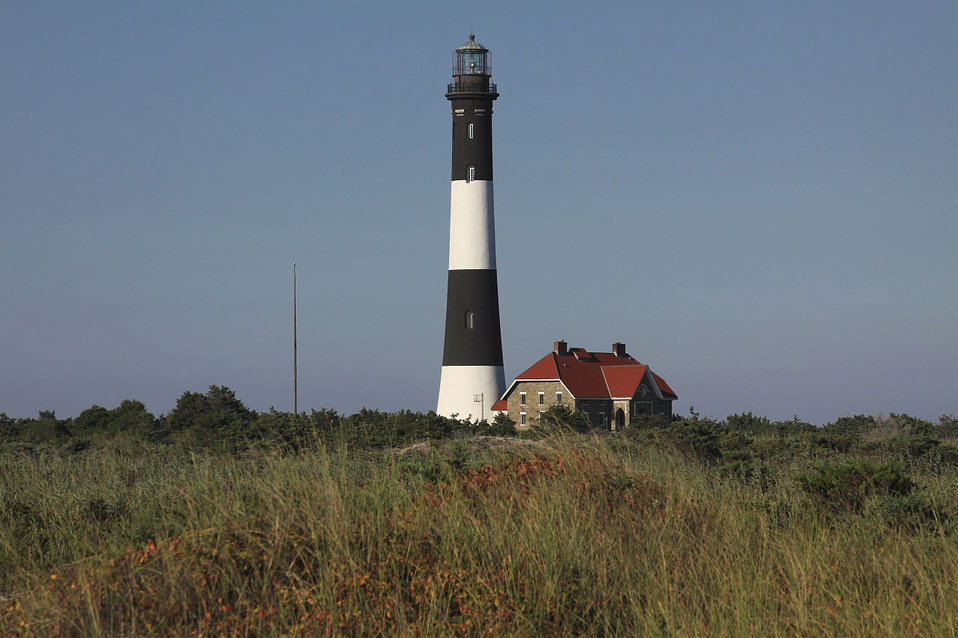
Lighthouse from distance.